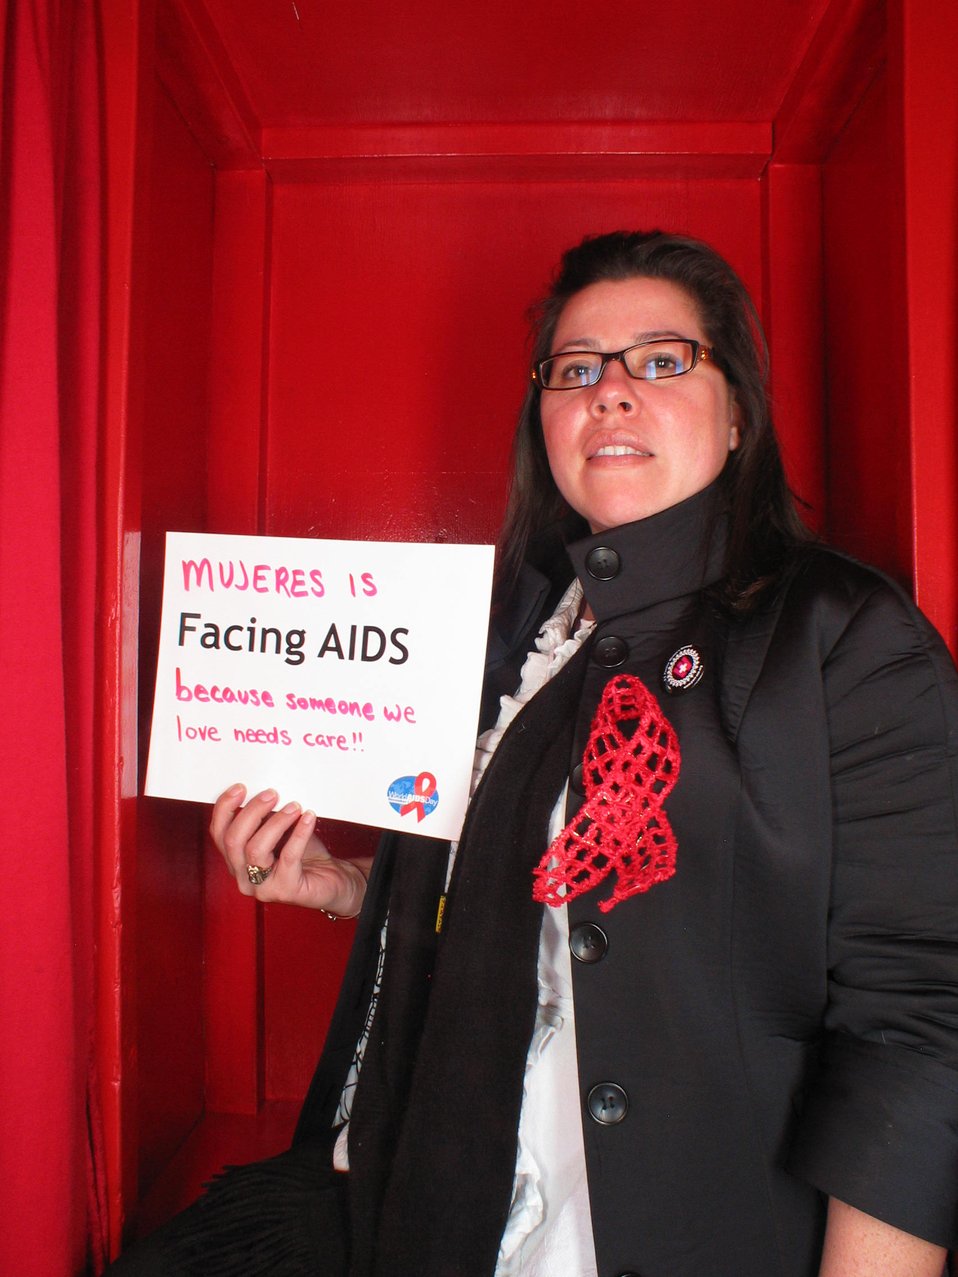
Facing AIDS because someone we love needs care!!!